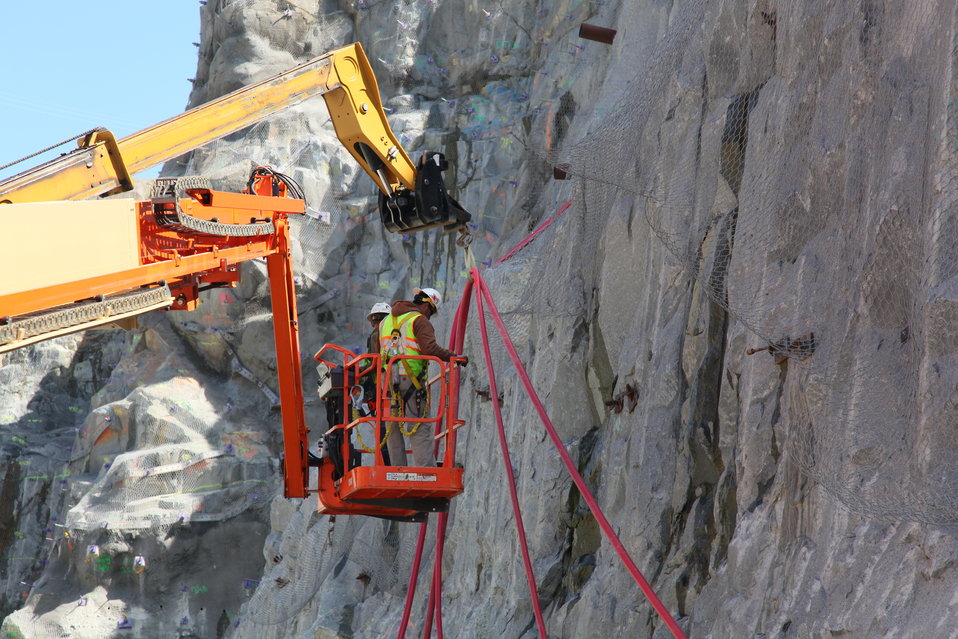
Installing electrical lines at the Folsom Dam auxiliary spillway

Contractors for the U.S. Army Corps of Engineers Sacramento District install electrical lines down the west wall at the excavation site for the Folsom Dam auxiliary spillway in Folsom, Calif., April 5, 2012. The electrical lines will power the concrete batch plant, with concrete paving of the spillway chute scheduled to begin in May. The spillway, scheduled to be ready for use in 2017, will allow Folsom Dam to release water sooner and more safely. The project is part of the Folsom Dam Joint Federal Project, a joint effort of the Sacramento District, the U.S. Bureau of Reclamation, the Central Valley Flood Protection Board and the Sacramento Area Flood Control Agency to improve the safety of the dam and reduce flood risk for the greater Sacramento area.